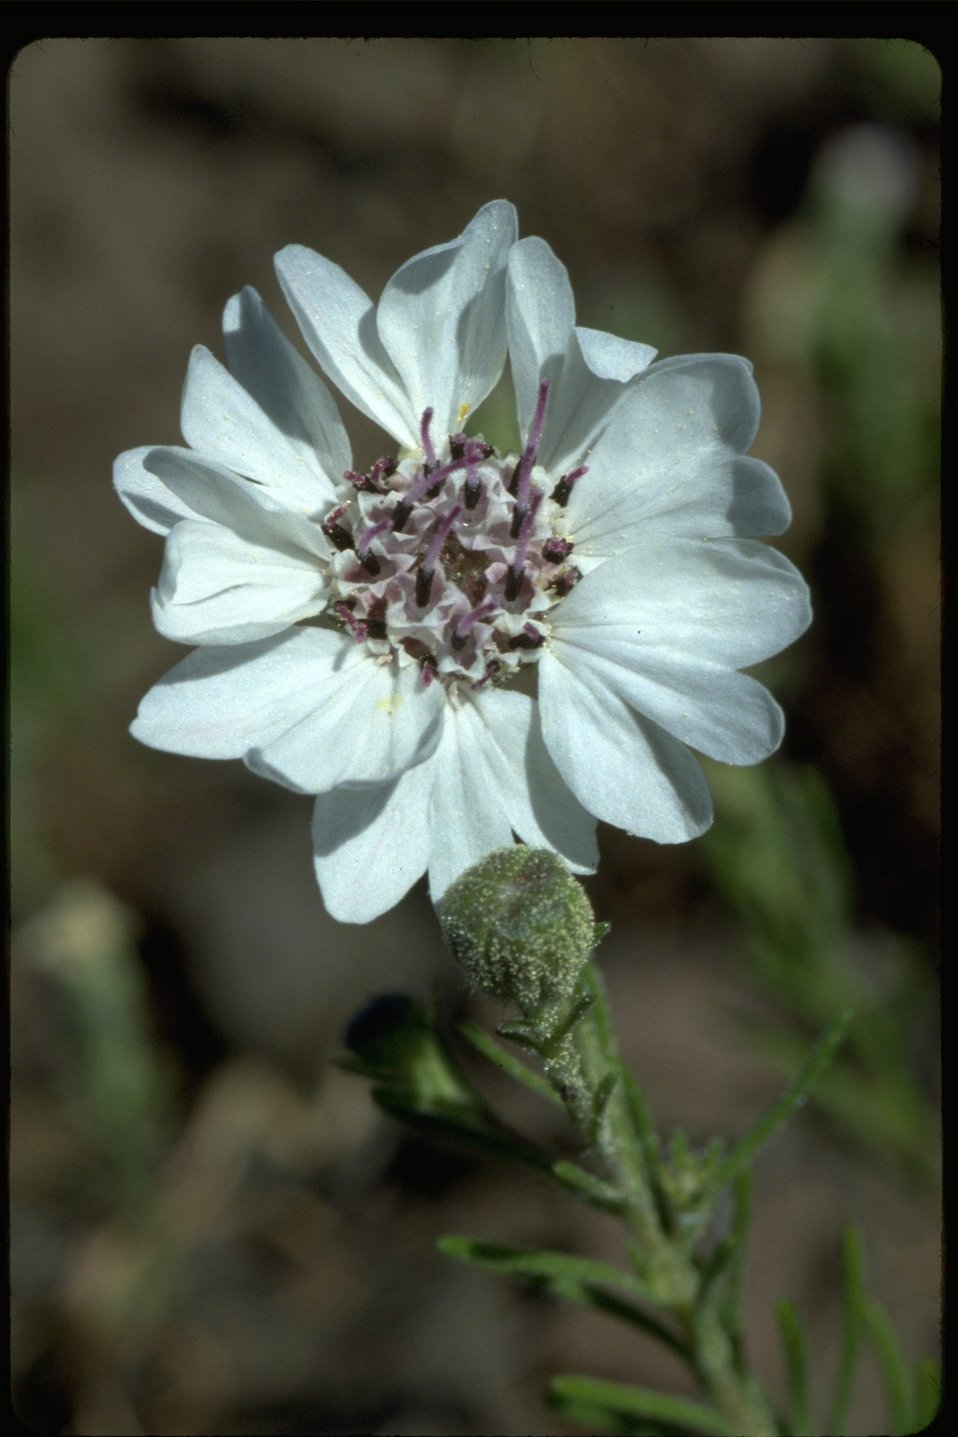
Close up shot of wild onion.